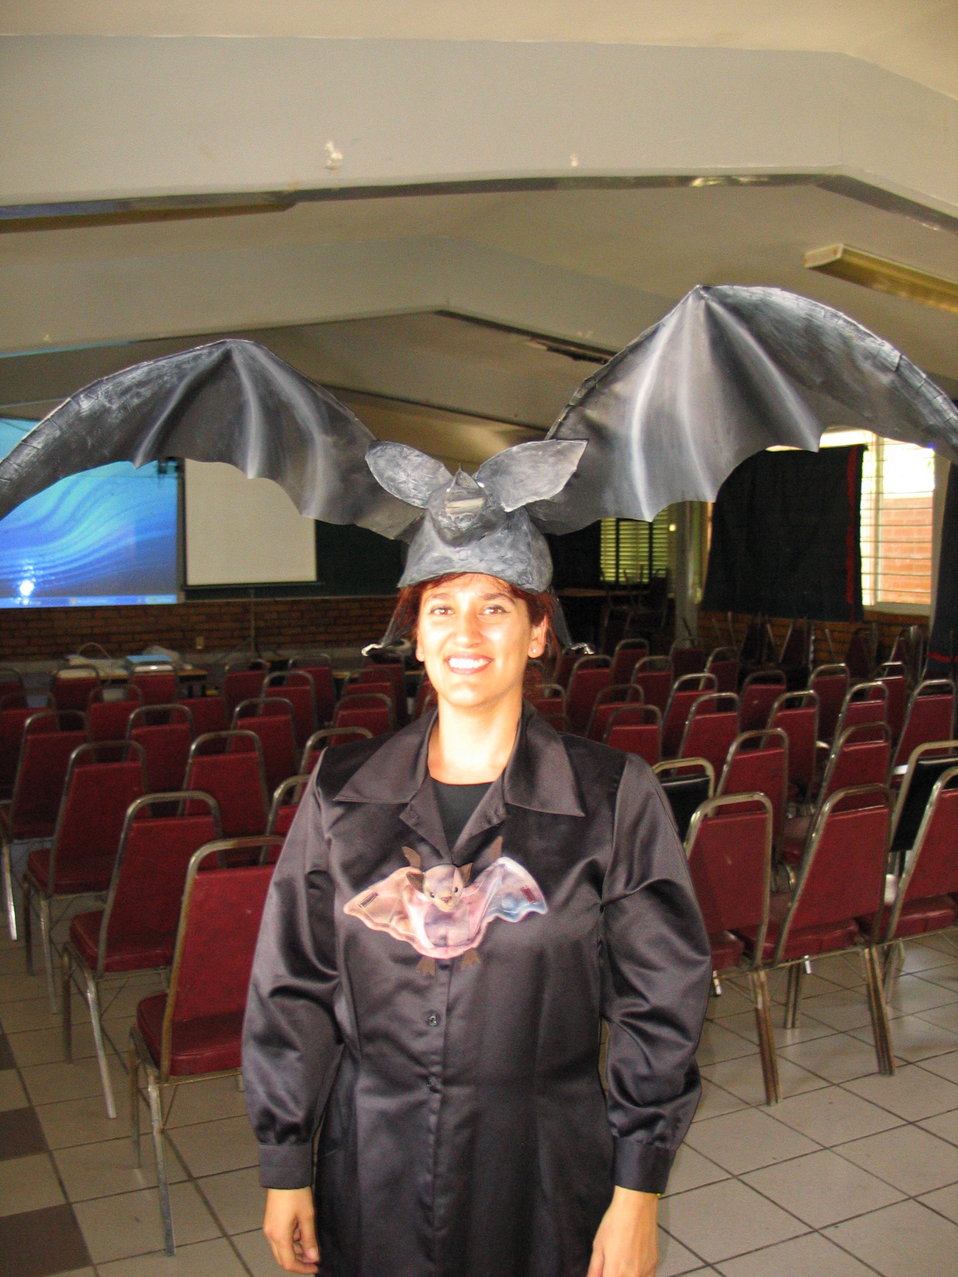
Bat costume

Skits, costumes, crafts, and lesson plans are all part of the education and awareness programs Rodrigo Medellin and his team lead to help students learn to love bats!